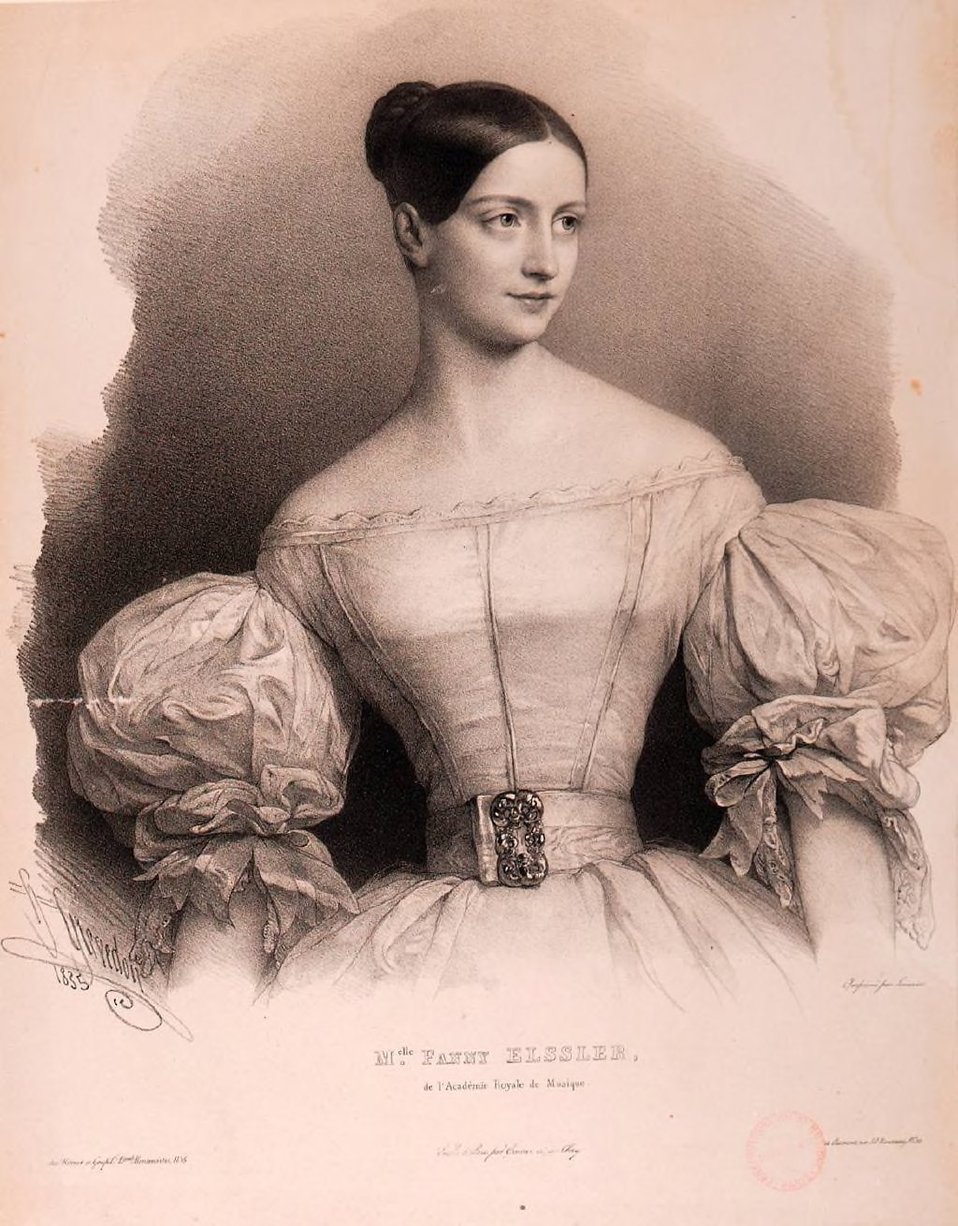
Elssler Fanny